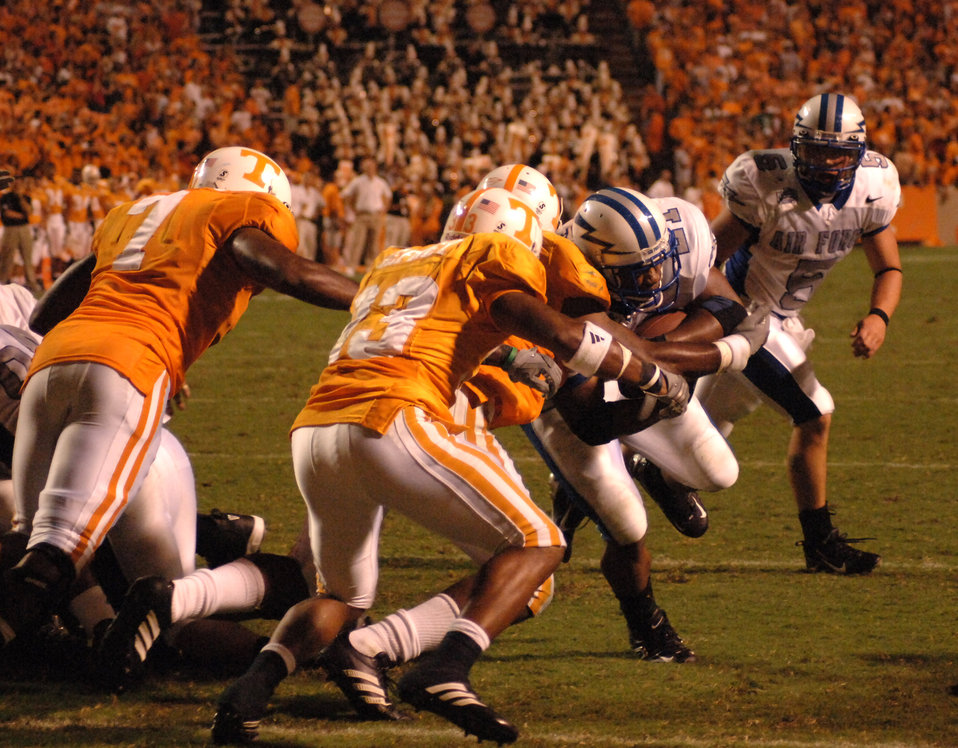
Falcons nearly upset #11 Tennessee in close season opener

Air Force Academy Falcon fullback Ryan Williams (#21) lowers his shoulder as Tennessee defenders swarm to him. Williams ran 16 times for 98 yards, but #11 Tennessee was able to hold on to edge the Falcons, 31-30, Sept. 9.